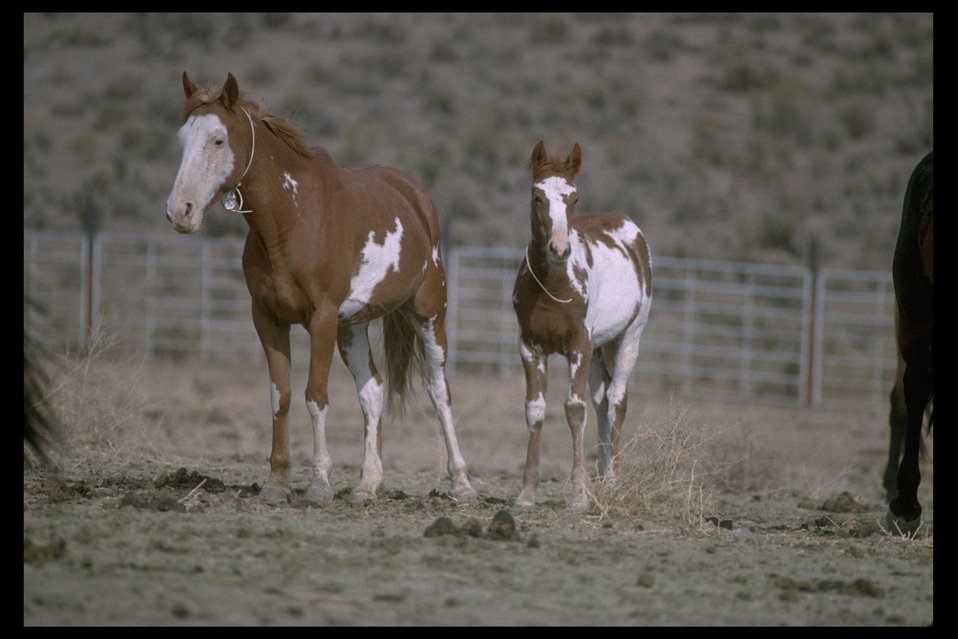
Pinto mare/foal pair at the Burns Wild Horse Corral in the South Steens HMA.